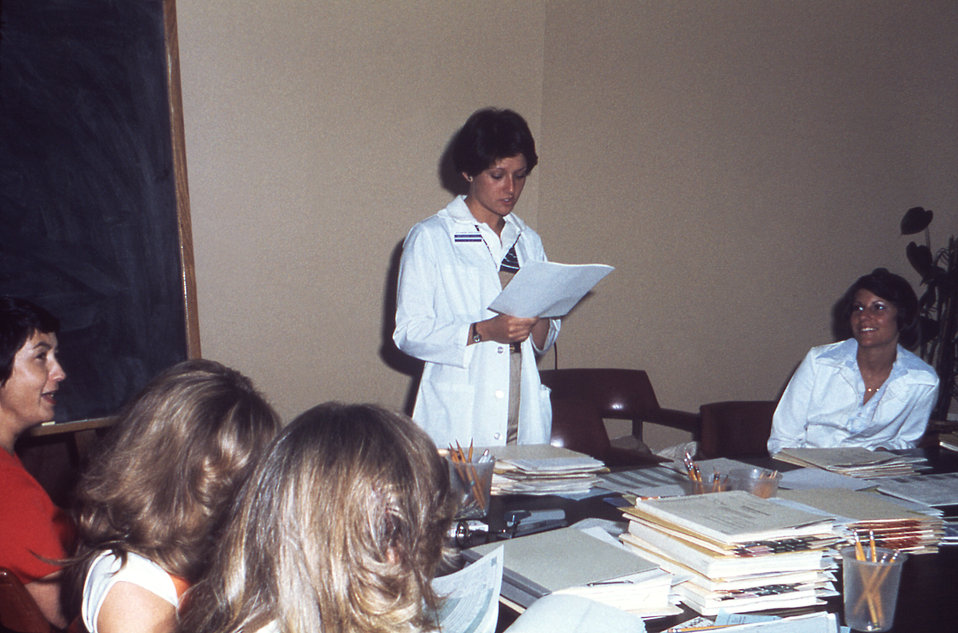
This historic image depicted a Centers for Disease Control (CDC) public health adviser conducting a meeting in a hospital setting, related to a pilot study known as SENIC (Study on the Efficacy of Nosocomial Infection Control), which measured the accuracy of a system, designed by Robert W. Haley, M.D., that detected hospital-acquired infections through the analysis of medical records. SENIC was ultimately used to measure the change of infection rates in a random sample of U.S. hospitals. In this picture the advisor appeared to be describing to a group of healthcare professionals, the protocols associated with an in-line quality control analysis that compares the duplicate reviews of the same medical records, in order to detect discrepancies.